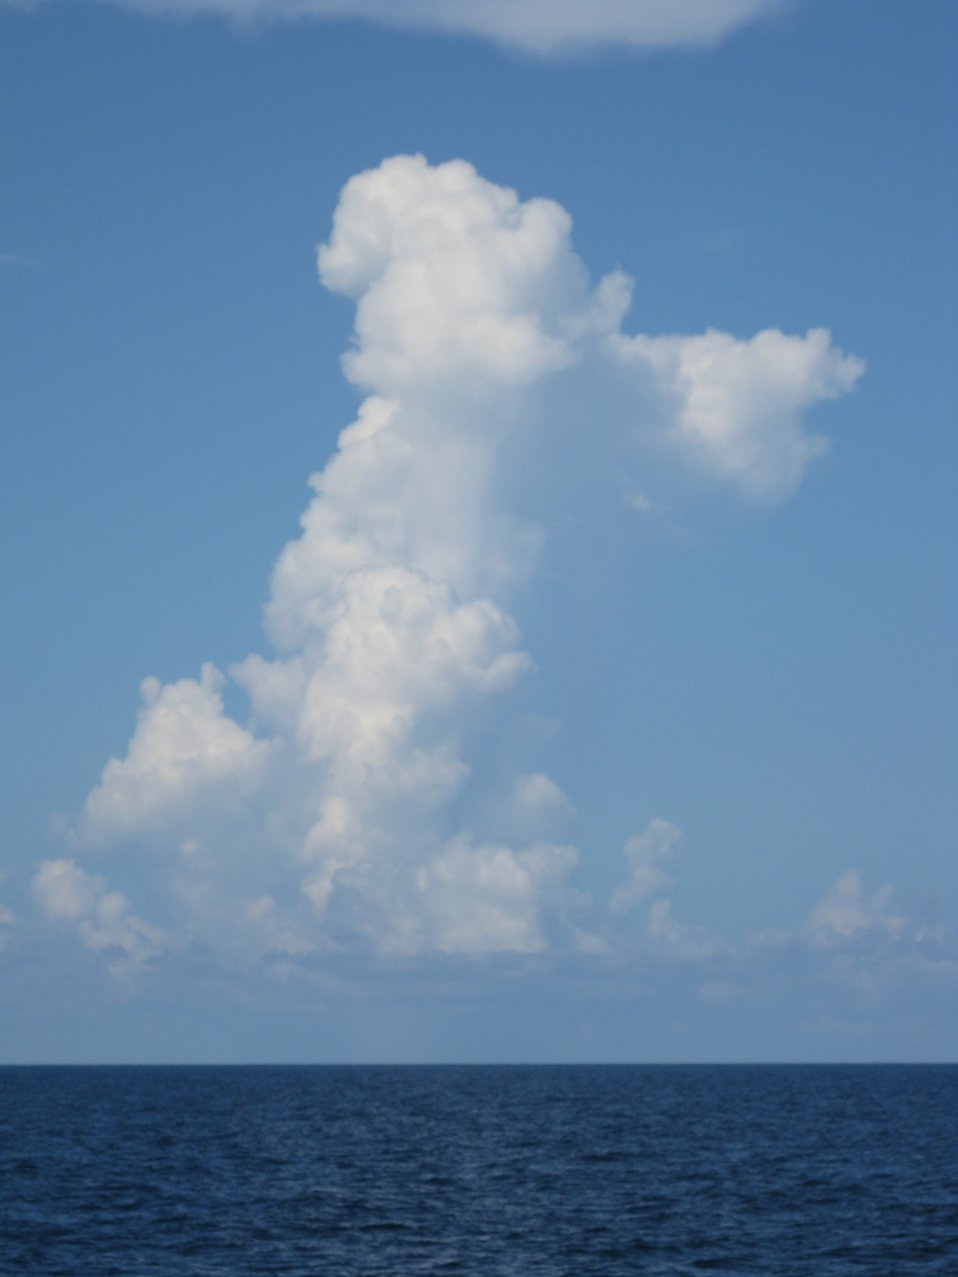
This poodle cloud won best of breed at the Gulf of Mexico dog show.